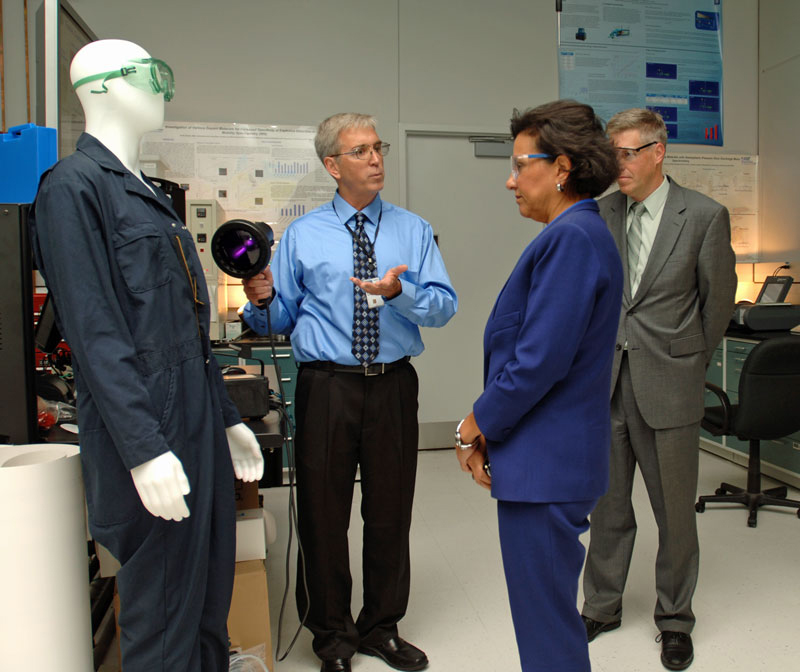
Secretary Pritzker Tours NIST

Secretary Pritzker tours the NIST Trace Contraband Detection laboratory with Acting Deputy Secretary and NIST Director Patrick Gallagher. The laboratory helps law enforcement agencies protect the public and enforce the law by developing improved methods and standards for trace detection of drugs and explosives.